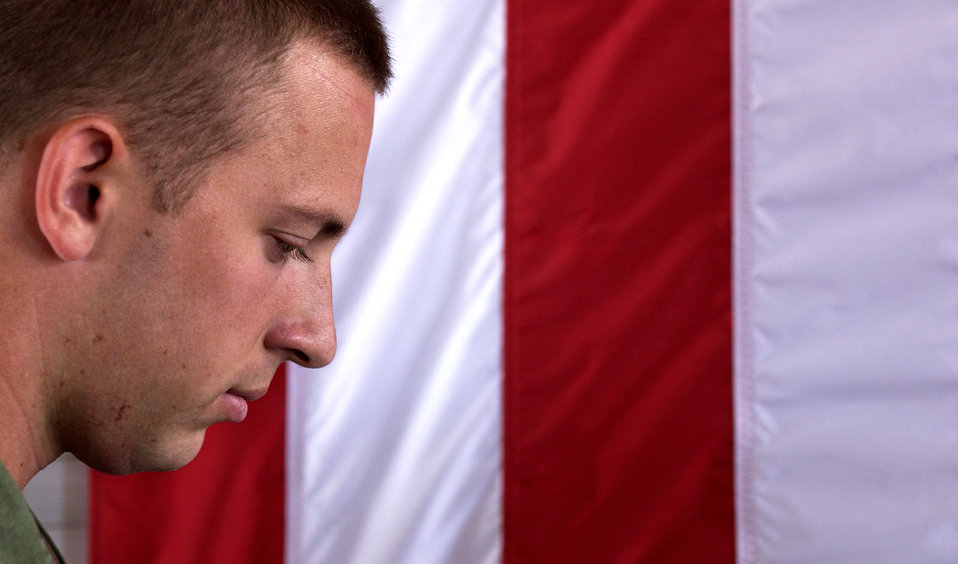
Honoring the fallen

ANDERSEN AIR FORCE BASE, Guam -- Senior Airman Tyler J. Trease participates in a moment of silence on Feb. 16 for Air Force firefighter Staff Sgt. Ray Rangel on Feb. 16. Sergeant Rangel, 29, died while attempting to rescue two Soldiers trapped in a Humvee that overturned in a canal Feb. 13 while operating out of Balad Air Base, Iraq. Airman Trease is a firefighter with the 36th Civil Engineer Squadron.